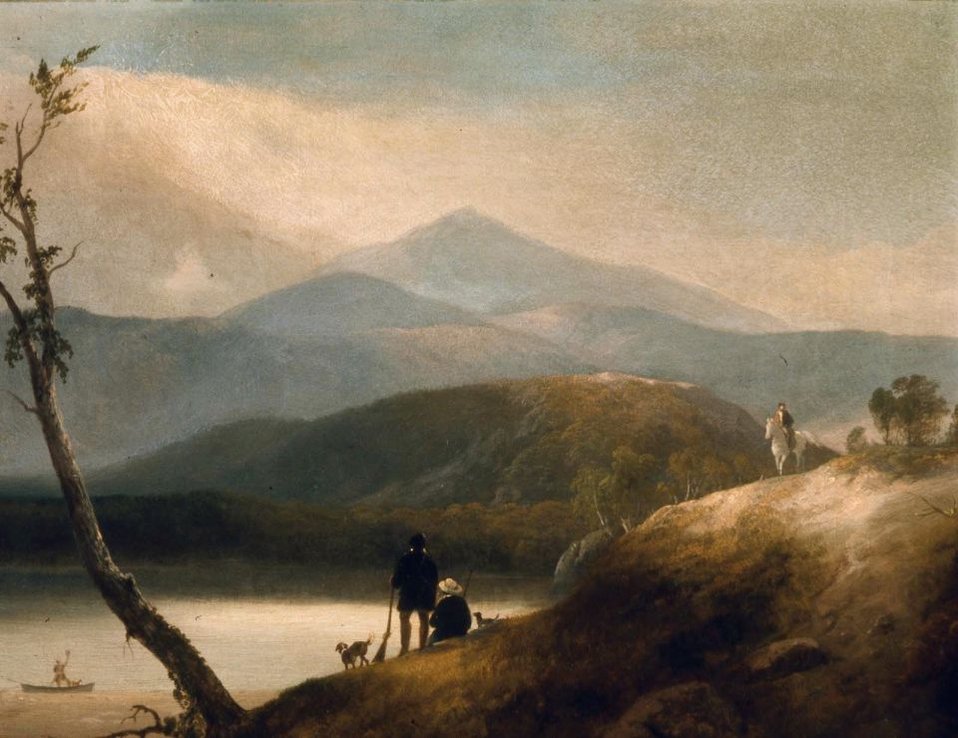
Alvan Fisher - Lake in the Mountains with Hunters